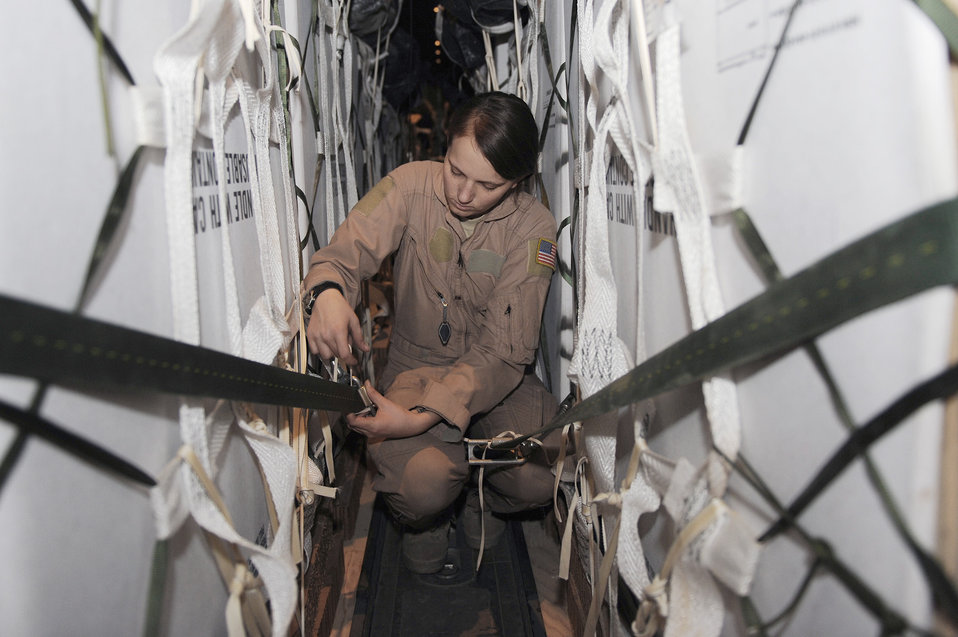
Supplies to remote Afghanistan bases

Airman 1st Class Rachael Orazine secures a cargo strap to an airdrop bundle on a C-130J Super Hercules Oct. 7, 2010, at Kandahar Airfield, Afghanistan. Airman Orazine is a loadmaster with the 772nd Expeditionary Airlift Squadron, and hails from Gulfport, Miss.